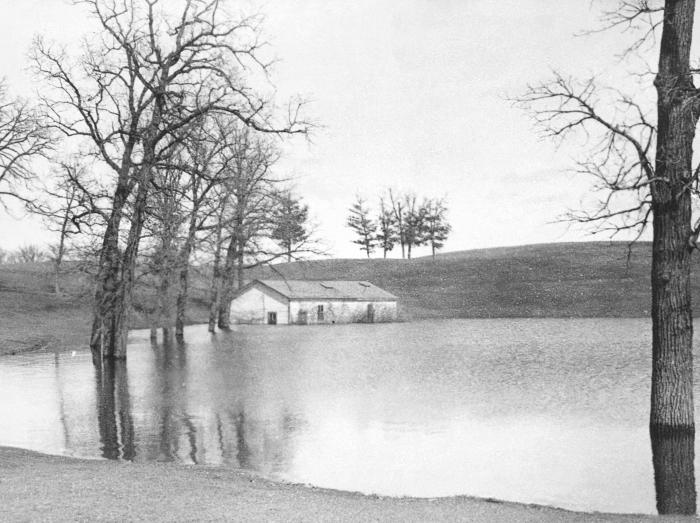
This 1939 historic photograph showed a flooded pump house at the Midland Hill Golf Club in St. Paul, Minnesota. The flood also contaminated water wells in the area.